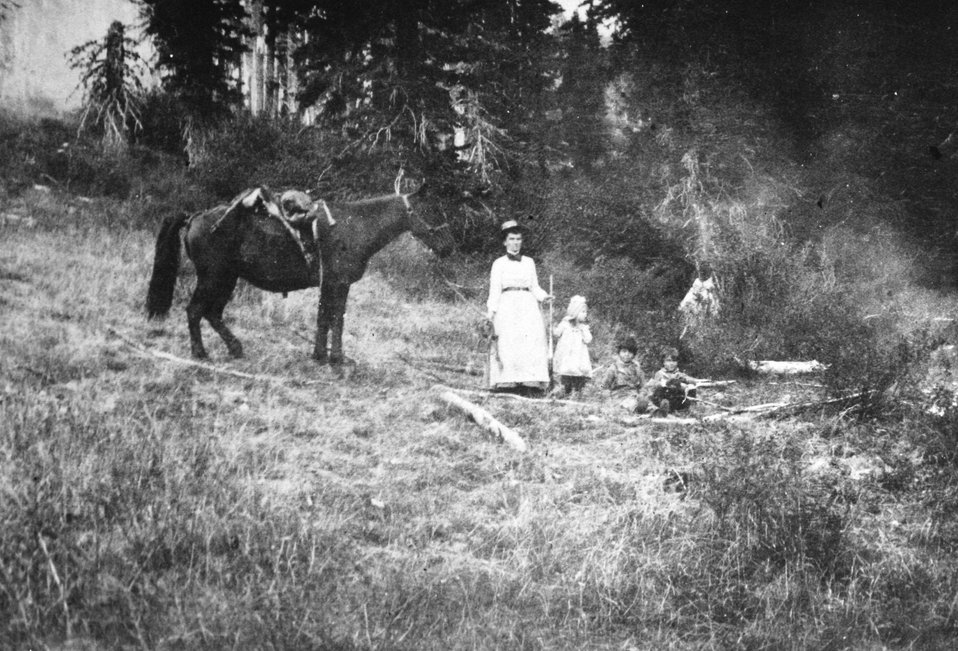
Annie, Alpine, Ivin and Evered Billings at Bear Camp C. 1904